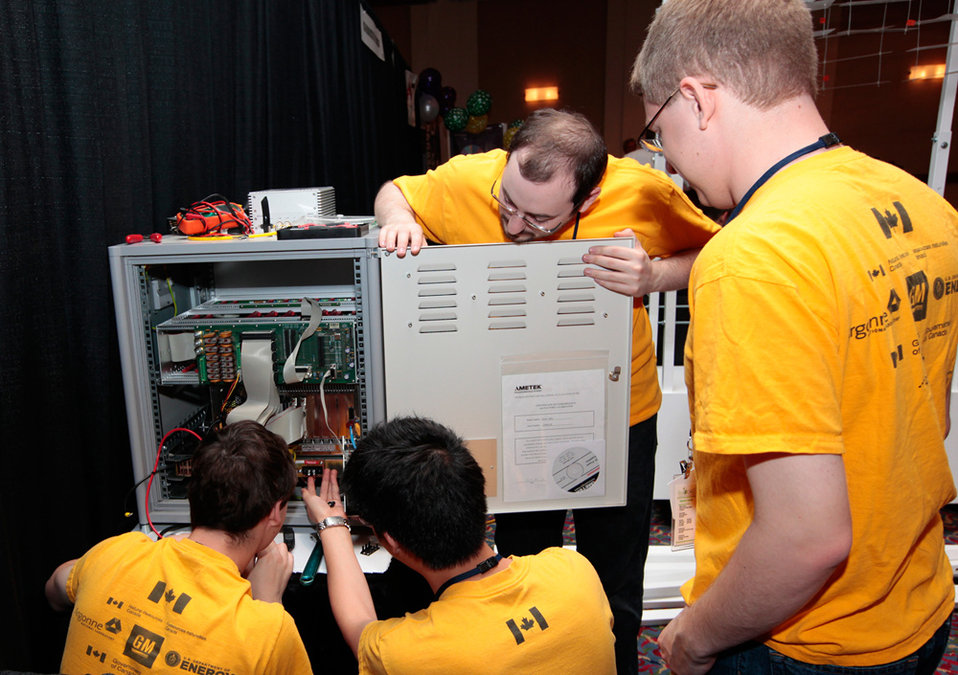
Year 1 of the EcoCAR 2 competition emphasized engineering design. Using modeling and simulation tools, teams selected and virtually tested their plug-in hybrid electric vehicle architecture and started developing some of the major vehicle subsystems. As part of the Year 1 finals in Los Angeles, teams presented their vehicle designs and business plans to more than 100 judges over the course of six days. Pictured here are members of the University of Waterloo team at the Year 1 competition. | Photo courtesy of EcoCAR 2.